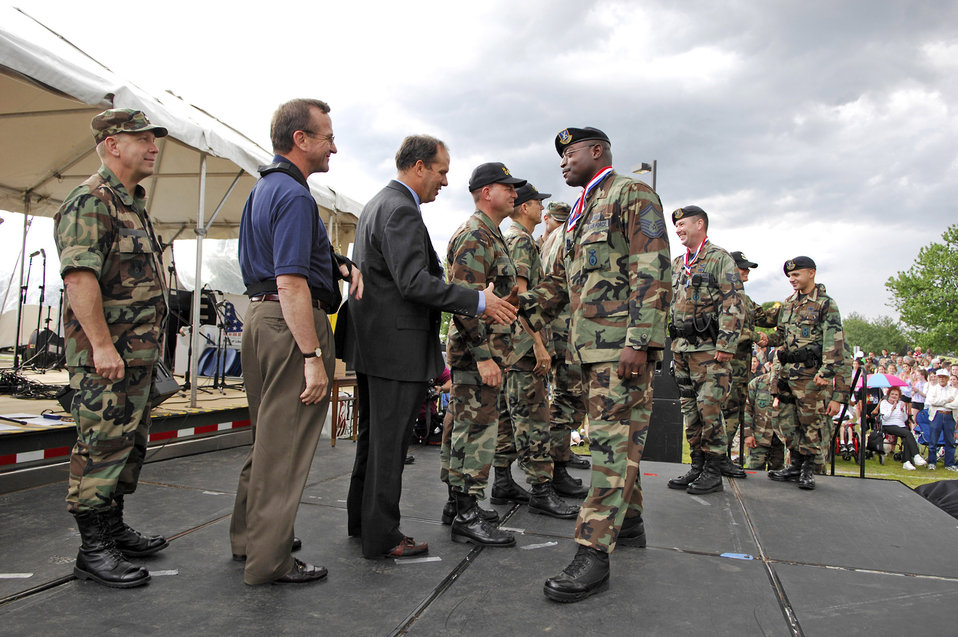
Hanscom Airmen receive heroes' welcome

Senior Master Sgt. Woodrow Carter shakes hands with Bruce Hevey during Hanscom's Heroes' Homecoming June 22 at Hanscom Air Force Base, Mass. Base leaders lined the stage to formally welcome home more than 60 servicemembers who deployed within the last six months. Hundreds of base members, family and friends gathered during the ceremony. Sergeant Carter is assigned to the 66th Security Forces Squadron and Mr. Hevey is the 653rd Electronic Systems Wing director.